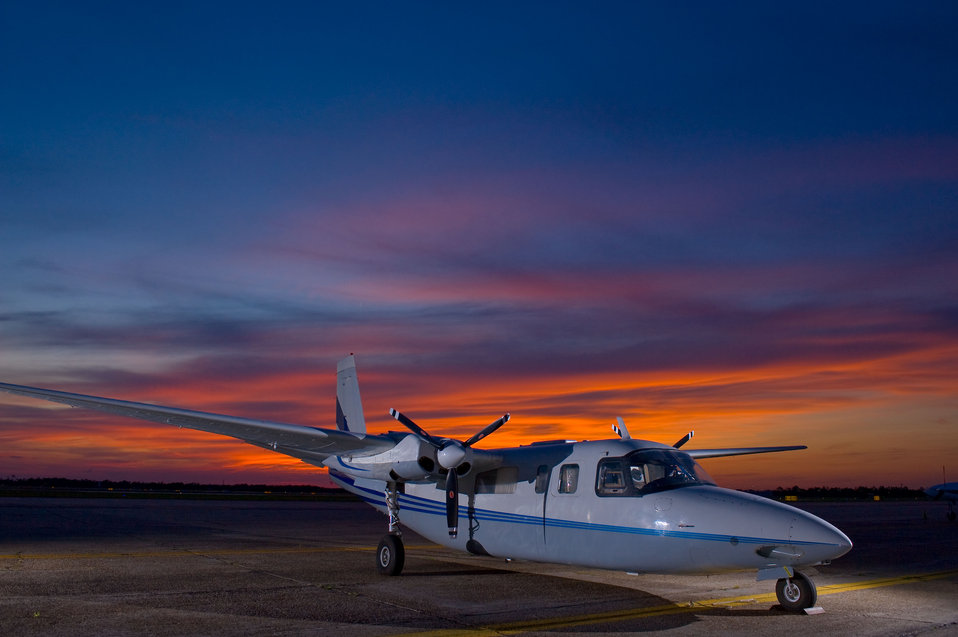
EPA's ASPECT plane

May 9, 2010 - U.S. EPA's Airborne Spectralphotometric Environmental Collection Technology (ASPECT) aircraft used to gather a wide array of information about the spill, including air quality data.